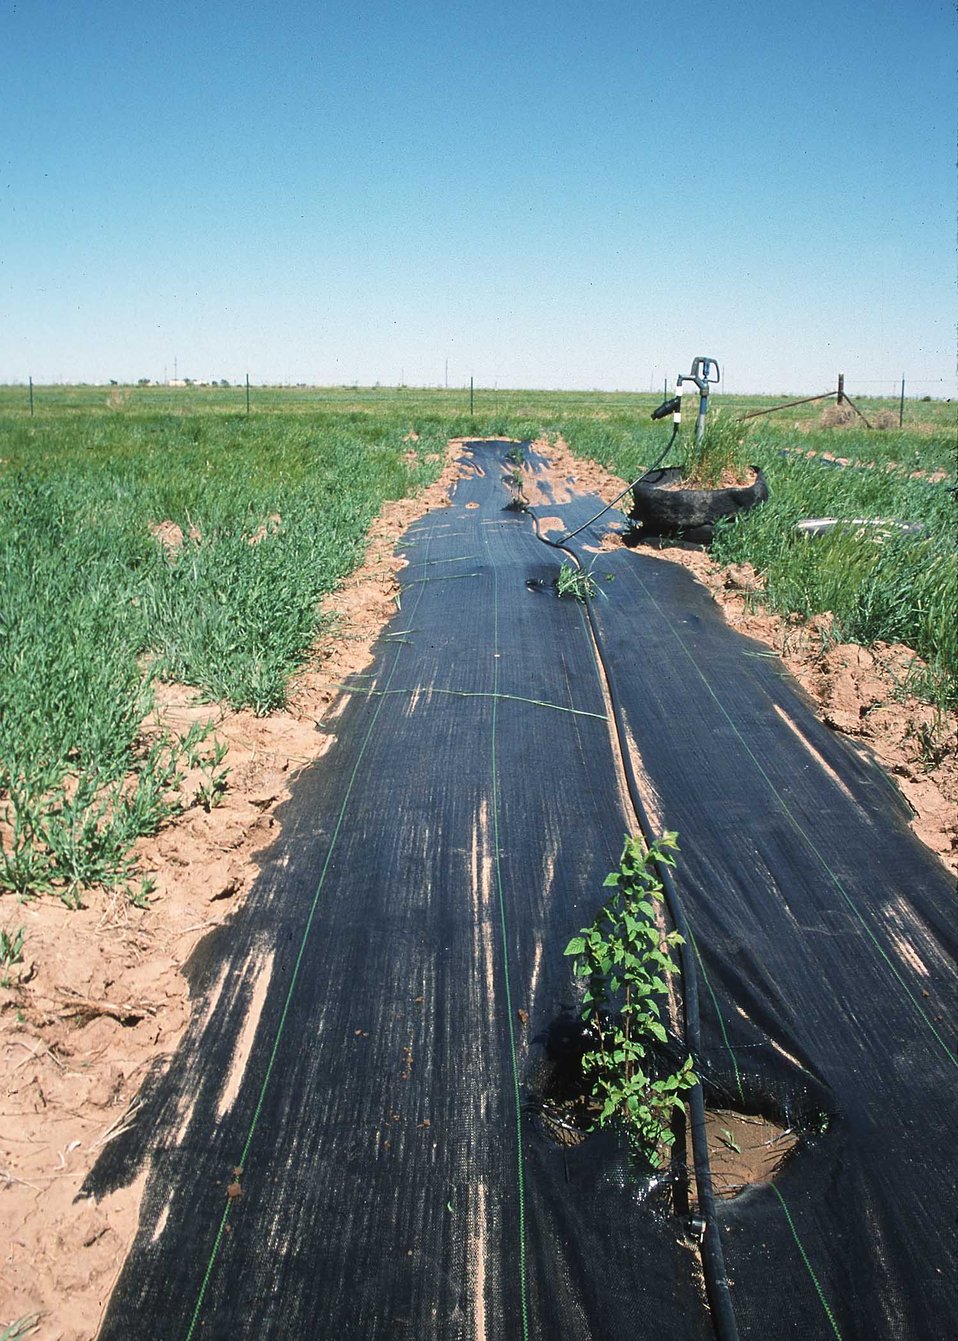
Wildlife planting as part of WHIP in eastern New Mexico.